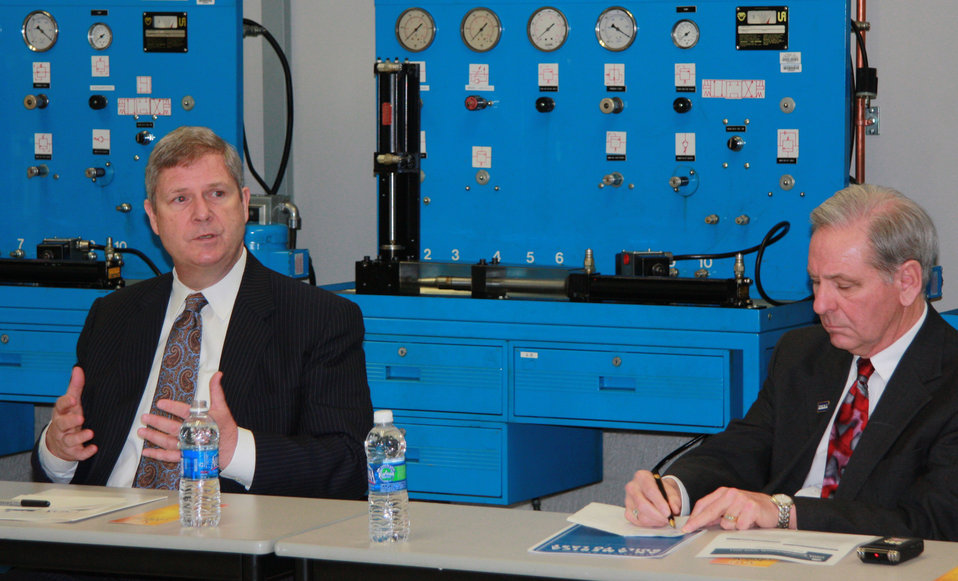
Agriculture Secretary Tom Vilsack hosted a roundtable with Iowa agriculture and business leaders as well as Des Moines Area Community College faculty and students to discuss President Obama’s efforts to strengthen the Iowa economy, on Friday, February 10, 2012 in Des Moines, IA.